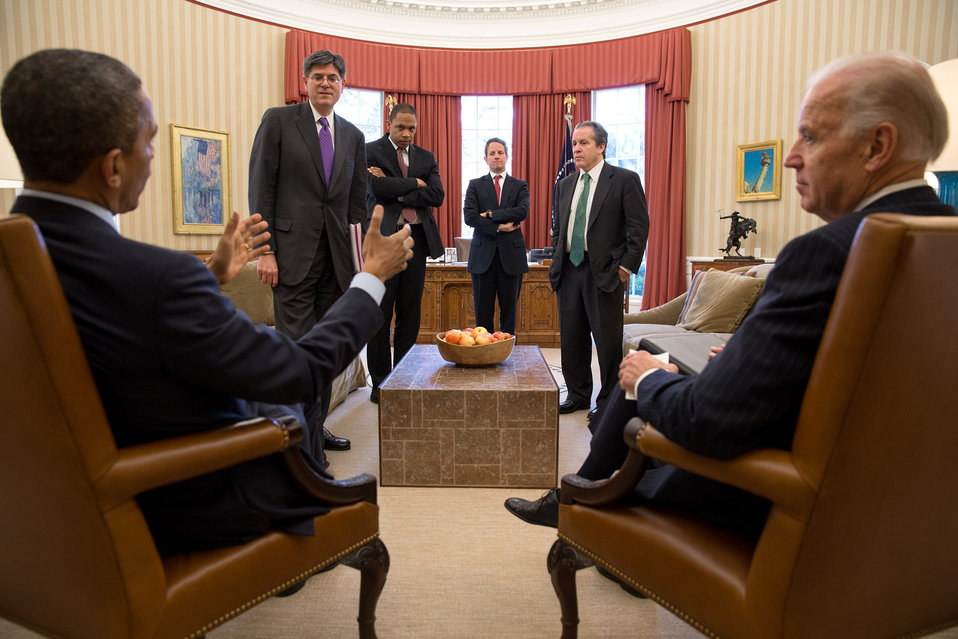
Secretary Geithner attends meeting in the Oval Office

President Barack Obama and Vice President Joe Biden talk with senior advisors in the Oval Office, Nov. 16, 2012. Standing, from left, are: Chief of Staff Jack Lew; Rob Nabors, Director of Legislative Affairs; Treasury Secretary Timothy Geithner; and National Economic Council Director Gene Sperling.